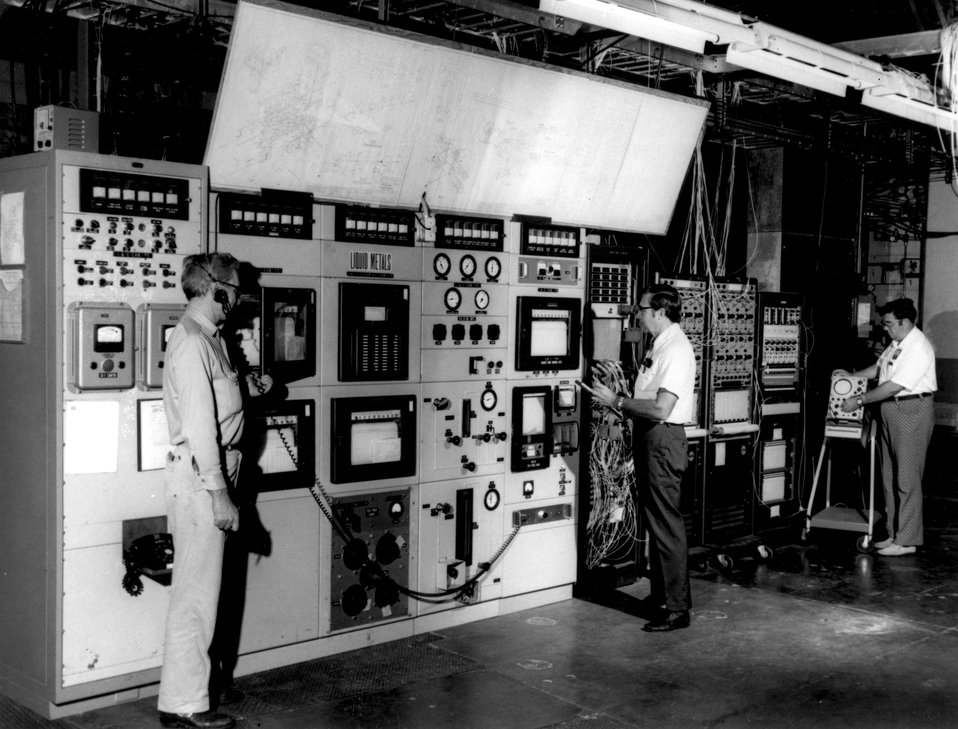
The U.S. Atomic Energy Commission's Oak Ridge National Laboratory is operating a test rig in support of the Liquid Metal Fast Breeder Reactor program. c. 1974